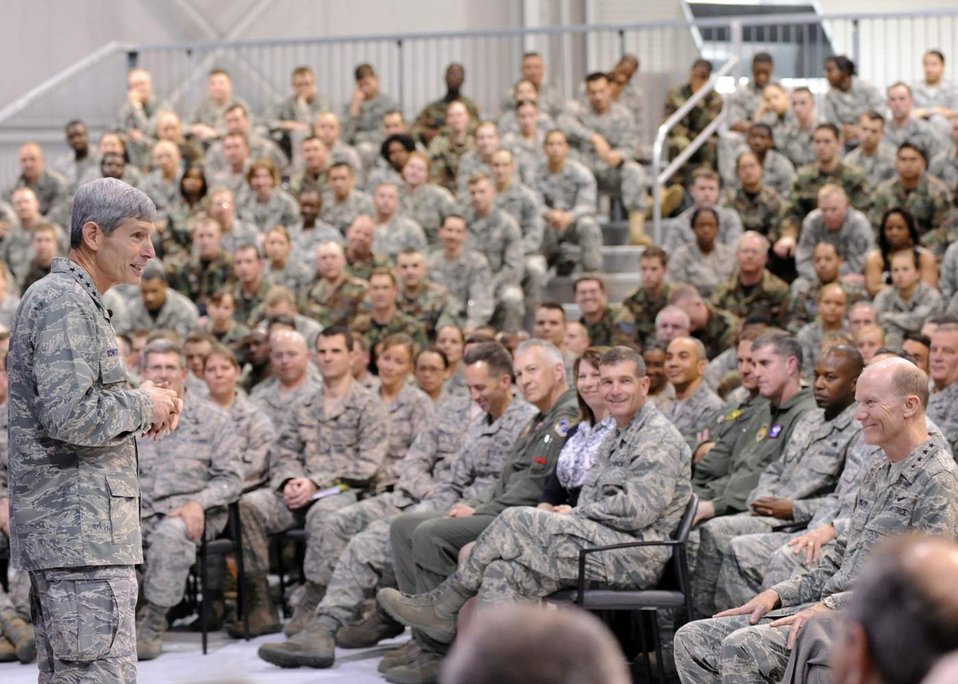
Gen. Schwartz to Airmen: 'We are a family'

General Norton Schwartz addresses personnel during an Airmen's Call March 11 at Langley Air Force Base, Va. General Schwartz, the Air Force chief of staff, reviewed Langley AFB's warfighting capabilities, viewed an F-22 demonstration during his visit.